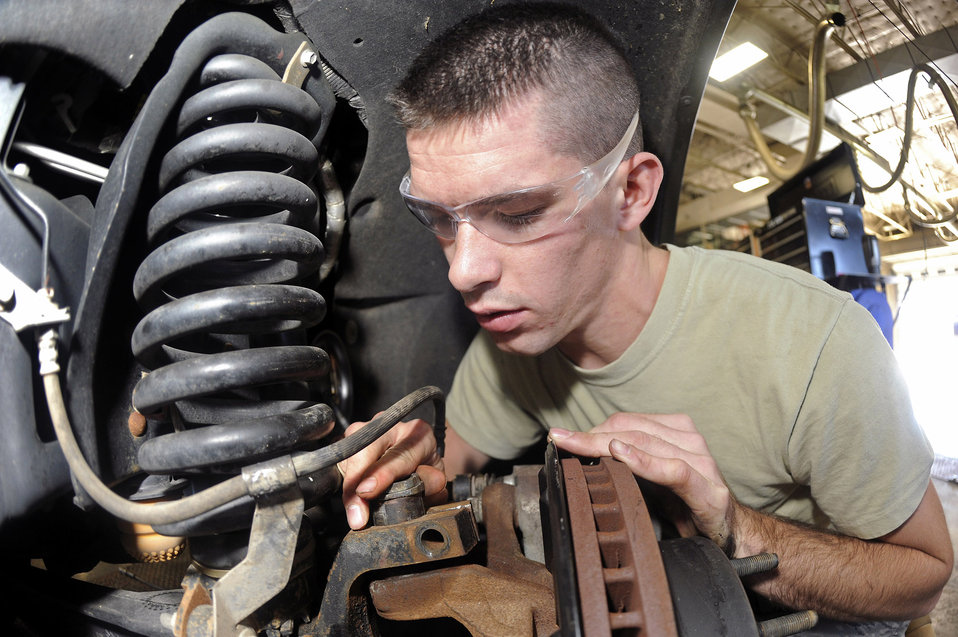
One step at a time

Airman 1st Class Joey Martincic, a vehicle mechanic with the 28th Logistics Readiness Squadron, installs a caster bushing on a vehicle, Sept. 21, 2010, at Ellsworth Air Force Base, S.D.